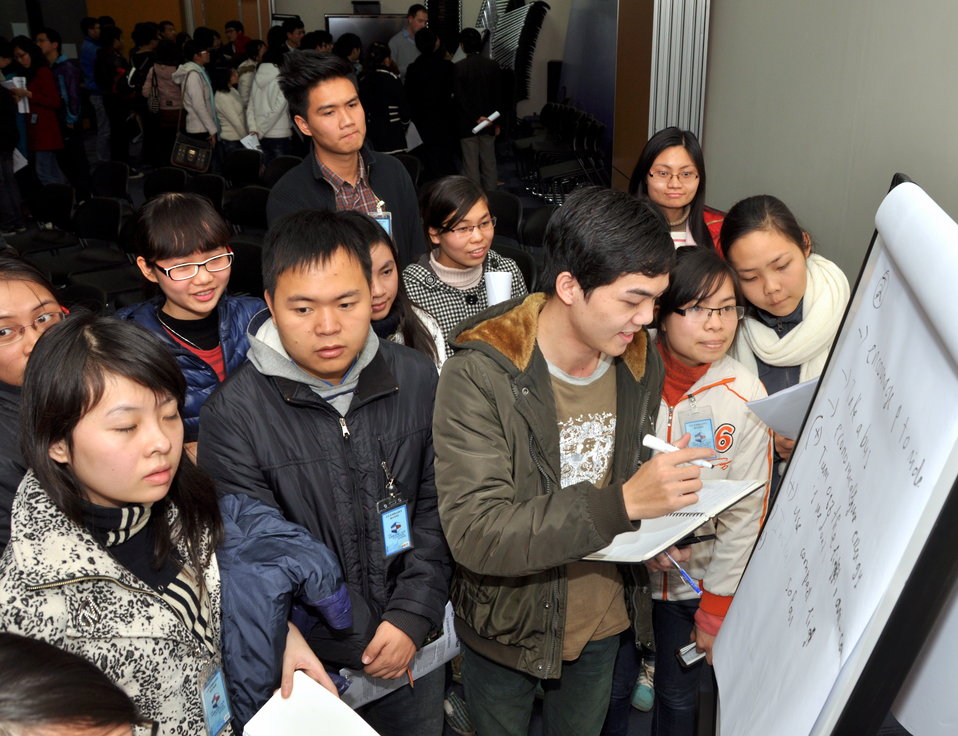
Speaker program on Climate Change and Clean Energy at the American Center

Hanoi, January 16, 2013